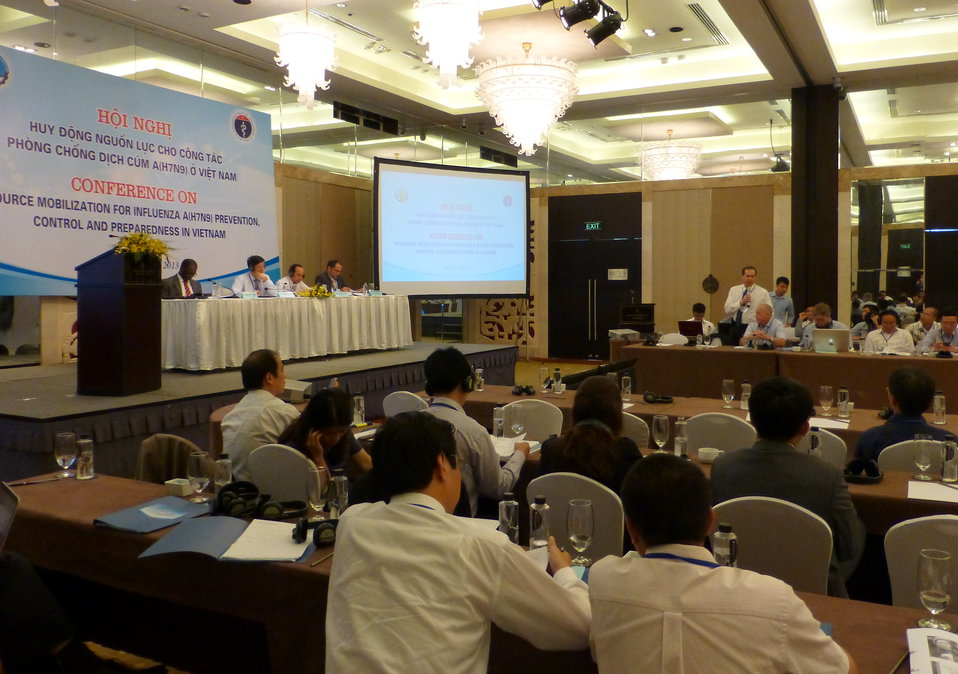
Conference on Resource Mobilization for Influenza A (H7N9) Prevention, Control and Preparedness in Vietnam

Hanoi, May 6, 2013
Supported by USAID Vietnam